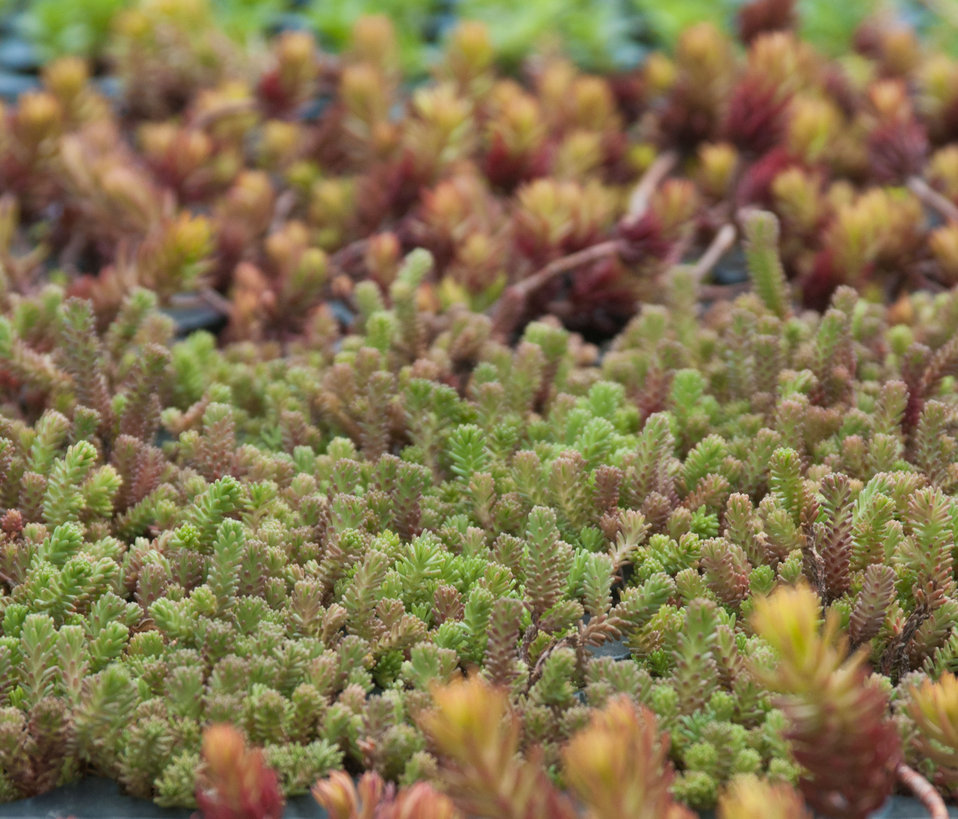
Rooftop vegetable garden is ready for planting at Bread for the City in Northwest Washington, DC, on Friday, April 29, 2011. The garden features specialized soil made of organic and inorganic material for rooftop gardens. The 30 wooden planters are about 4 inches tall but are not separate from the soil covering the roof, so there is a 10' depth to the plant in the boxes. Ground cover plants are already on site and await a team of volunteers to plant them in the walkways to retain moisture and help keep the soil temperature stable. This will be the largest of this kind in the Metro DC area. In addition to supplementing the fresh vegetable given to the community, it will also allow local residents to grown produce that is not normally marketed in this area.